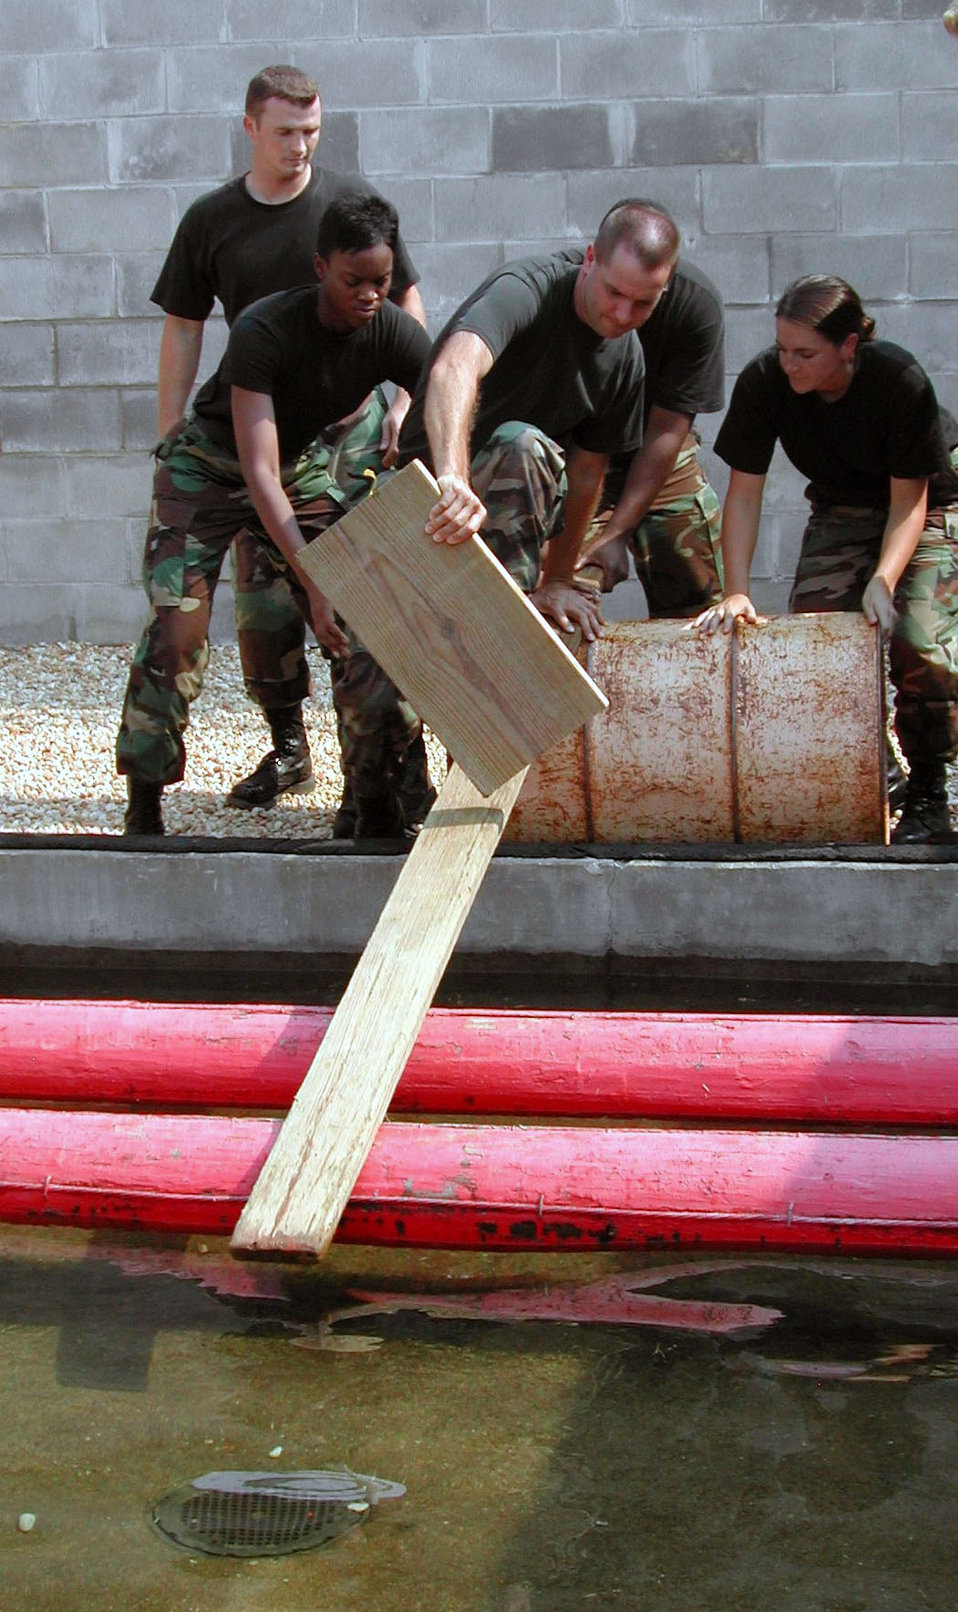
Project

MAXWELL AIR FORCE BASE, Ala. -- From left, 2nd Lts. Alan Condor and Kira Harvey, Master Sgt. Jerry Gibson and 2nd Lt. Patricia Currin attempt to cross one of the water obstacles in a